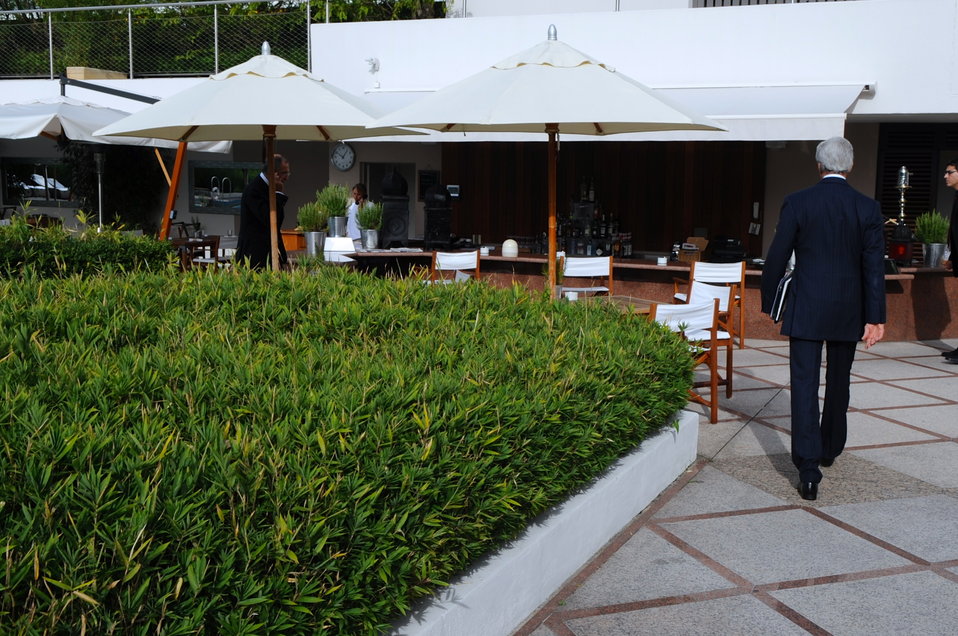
Secretary Kerry Approaches Foreign Minister Lavrov Before Final Negotiating Session

10:06 a.m., September 14, 2013 - U.S. Secretary of State John Kerry approaches his Russian counterpart, Foreign Minister Sergey Lavrov, on the pool deck of the Hotel Intercontinental in Geneva, Switzerland, to propose they meet outdoors for their final negotiating session over an agreement to eliminate Syrian chemical weapons.